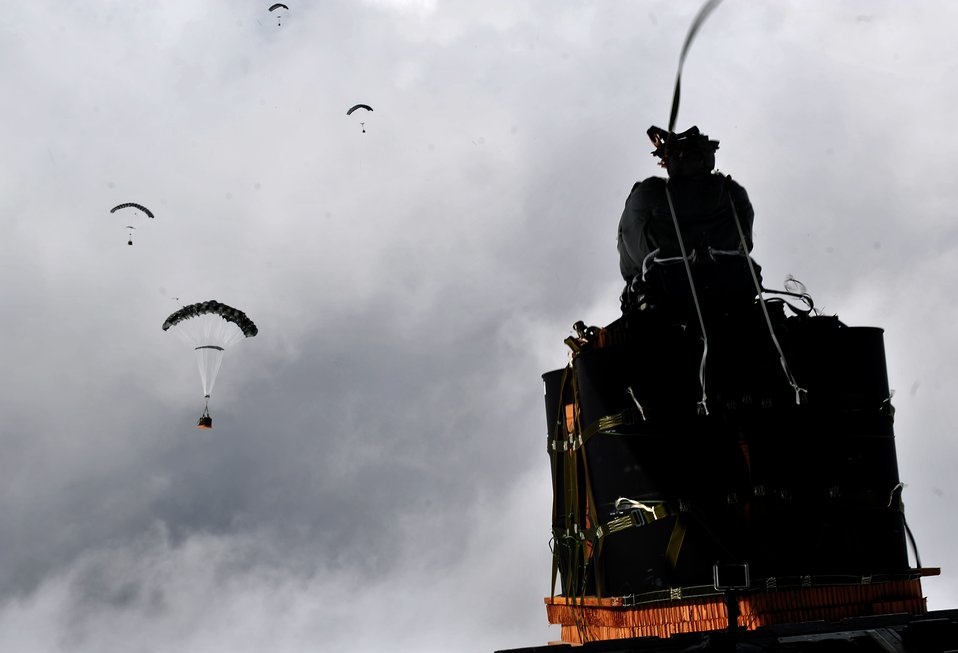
In the drop zone

A parachute bundle with an Joint Precision Air Drop System is dropped from a C-130J Hercules Nov. 27, 2011, to a remote forward operating base. The JPAD system uses a GPS navigation system to guide parachute bundles to precise drop zones, minimizing collateral damage, troops' ground travel and the vulnerability of the aircraft.